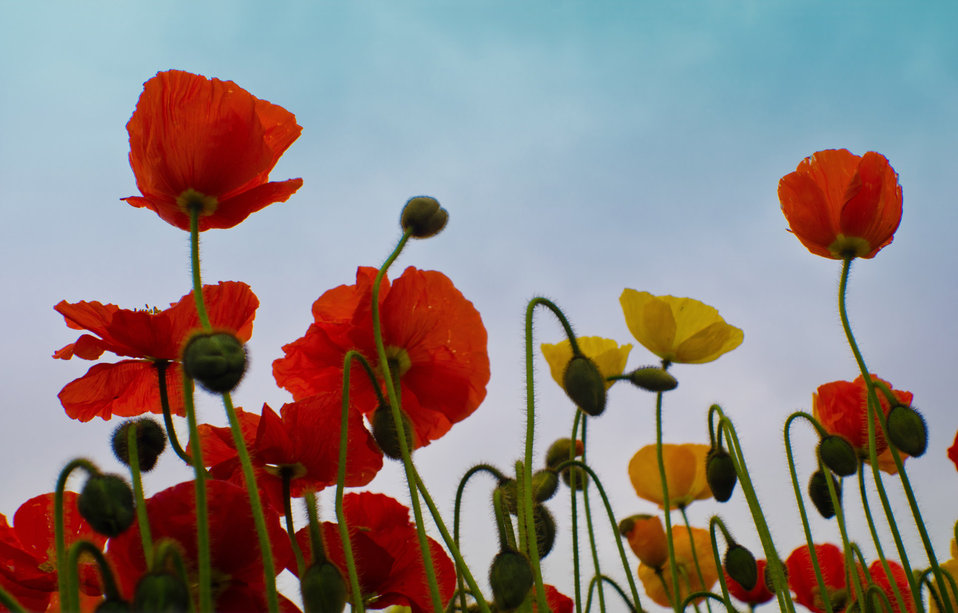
Nice flowers.